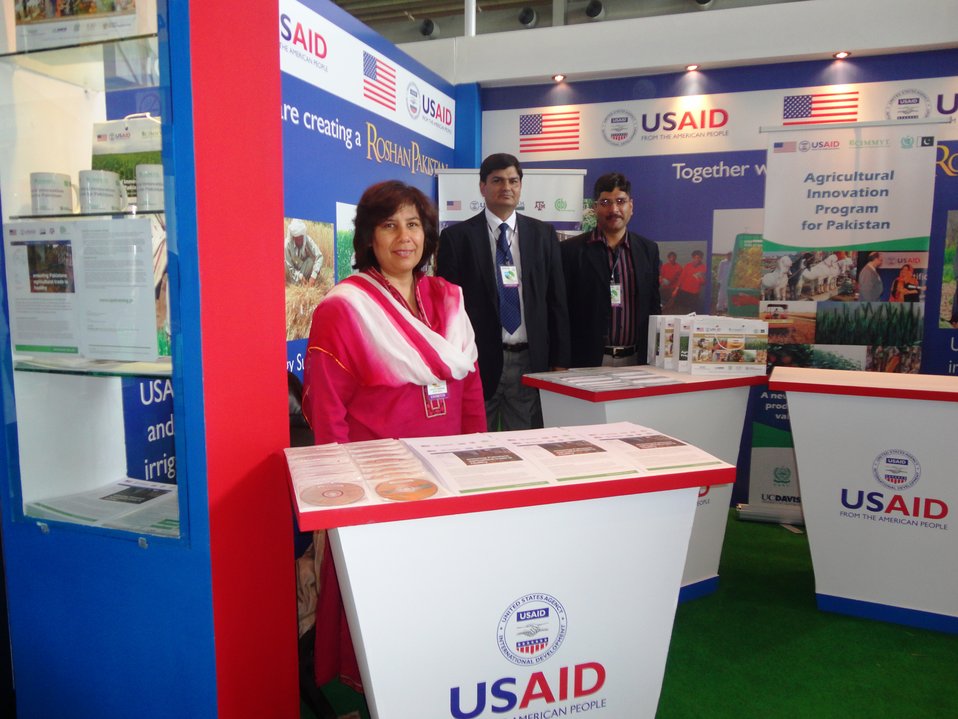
USDA SPS Project at the DAWN Sarsabaz Agri Expo

CABI Team, while representing USDA SPS project at the Dawn Sarsabz Agri Expo.